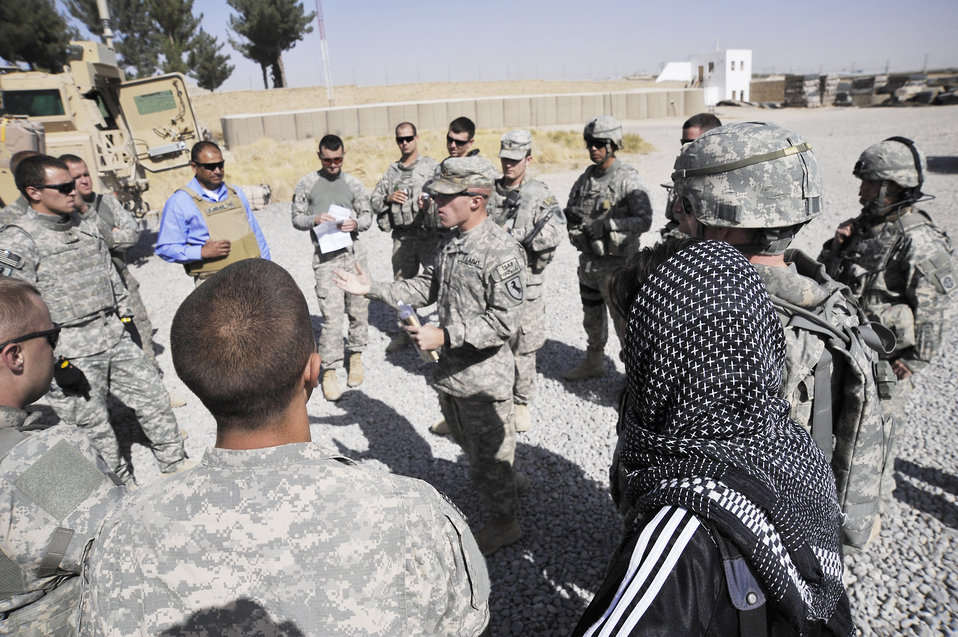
Political Campaign

U.S. servicemembers from Provincial Reconstruction Team (PRT) Zabul, gather around U.S. Army 2nd Lt. Anthony Chesini, secuirty forces platoon leader, while he briefs the rules of engagement prior to a convoy to Shar-e-Safa here Oct. 23, 2009.